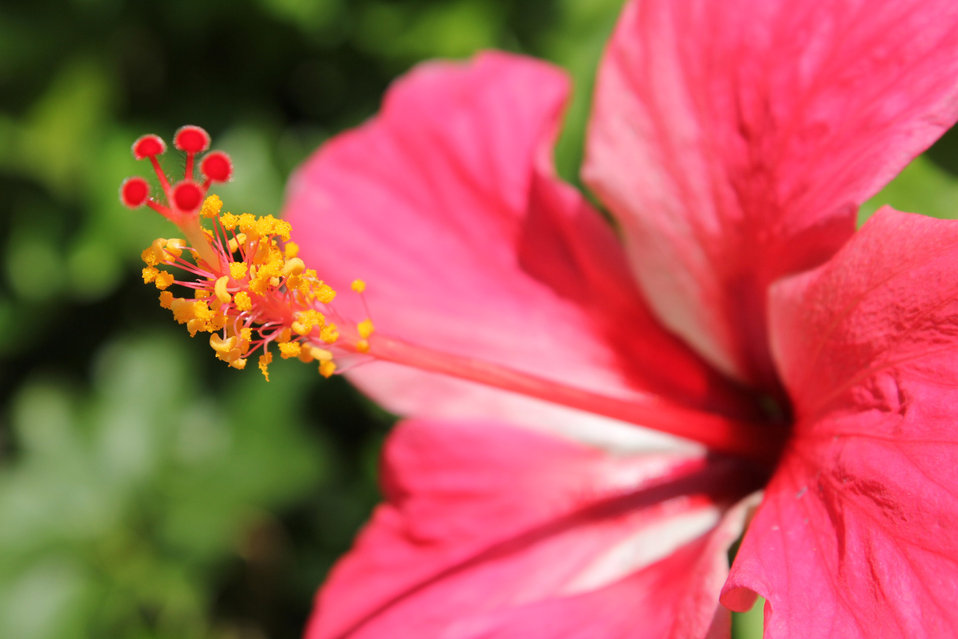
Red gumamela flower.